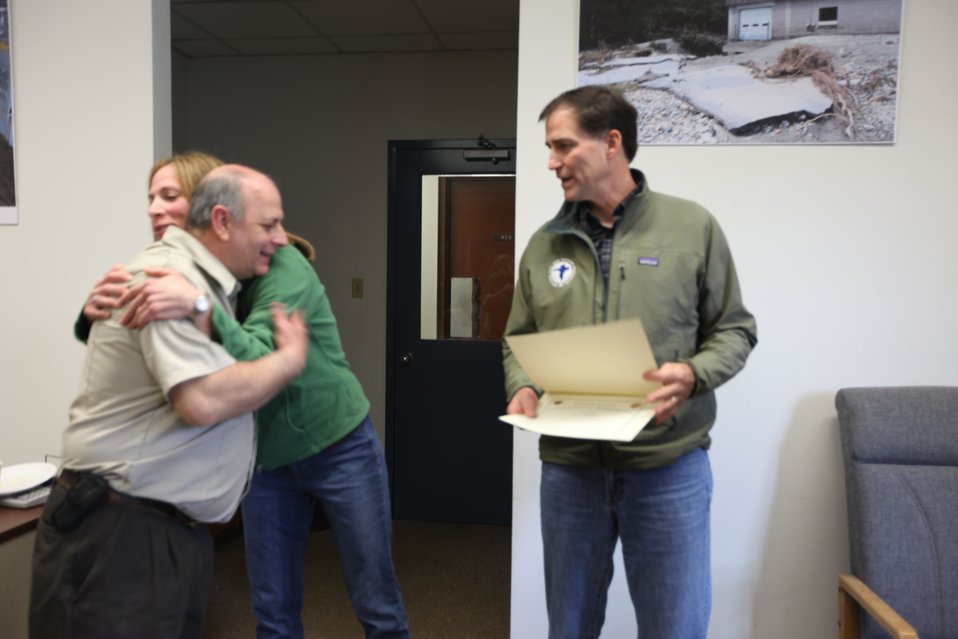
A hug from Northeast Regional Director Wendi Weber for Les Miller

U.S. Fish & Wildlife Service Director Dan Ashe visits the Northeast Region
for a tour of the White River National Fish Hatchery in Bethel, Vermont on
April 27, 2012. The hatchery was devastated by Tropical Storm Irene and
Dan Ashe had the chance to meet and thank the staff for their heroic work.
Director Ashe also visited restoration/flood response/fish passage project
sites in Rochester, Vermont and met with local officials and staff from the
White River Partnership.